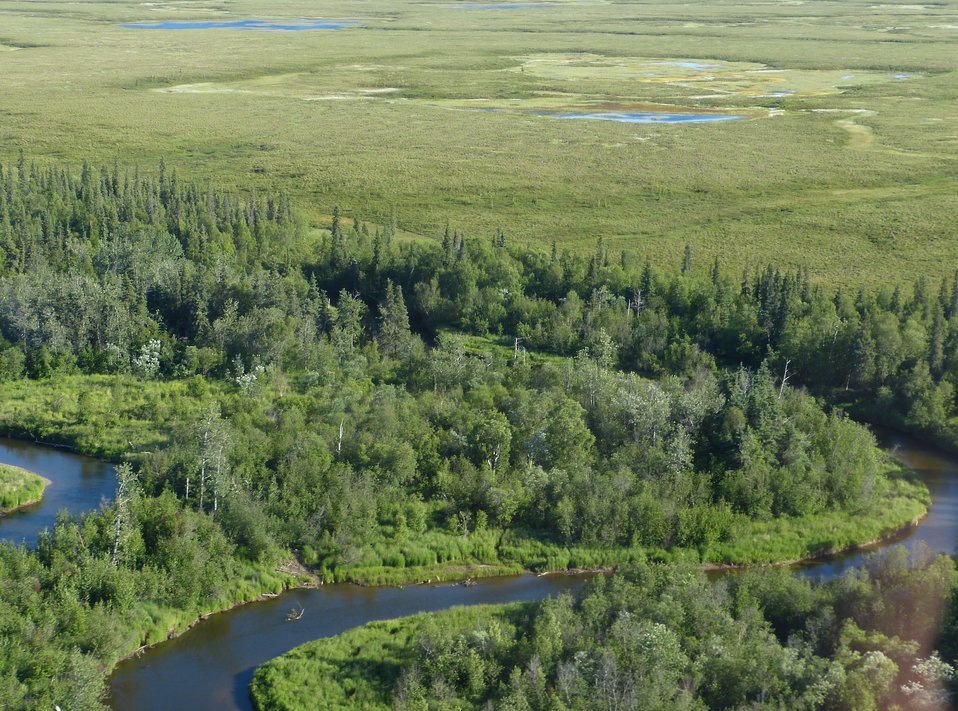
Akulikutak River, Yukon Delta National Wildlife Refuge

Photo by: Kristine Sowl,
USFWS, Yukon Delta NWR, July 11, 2013